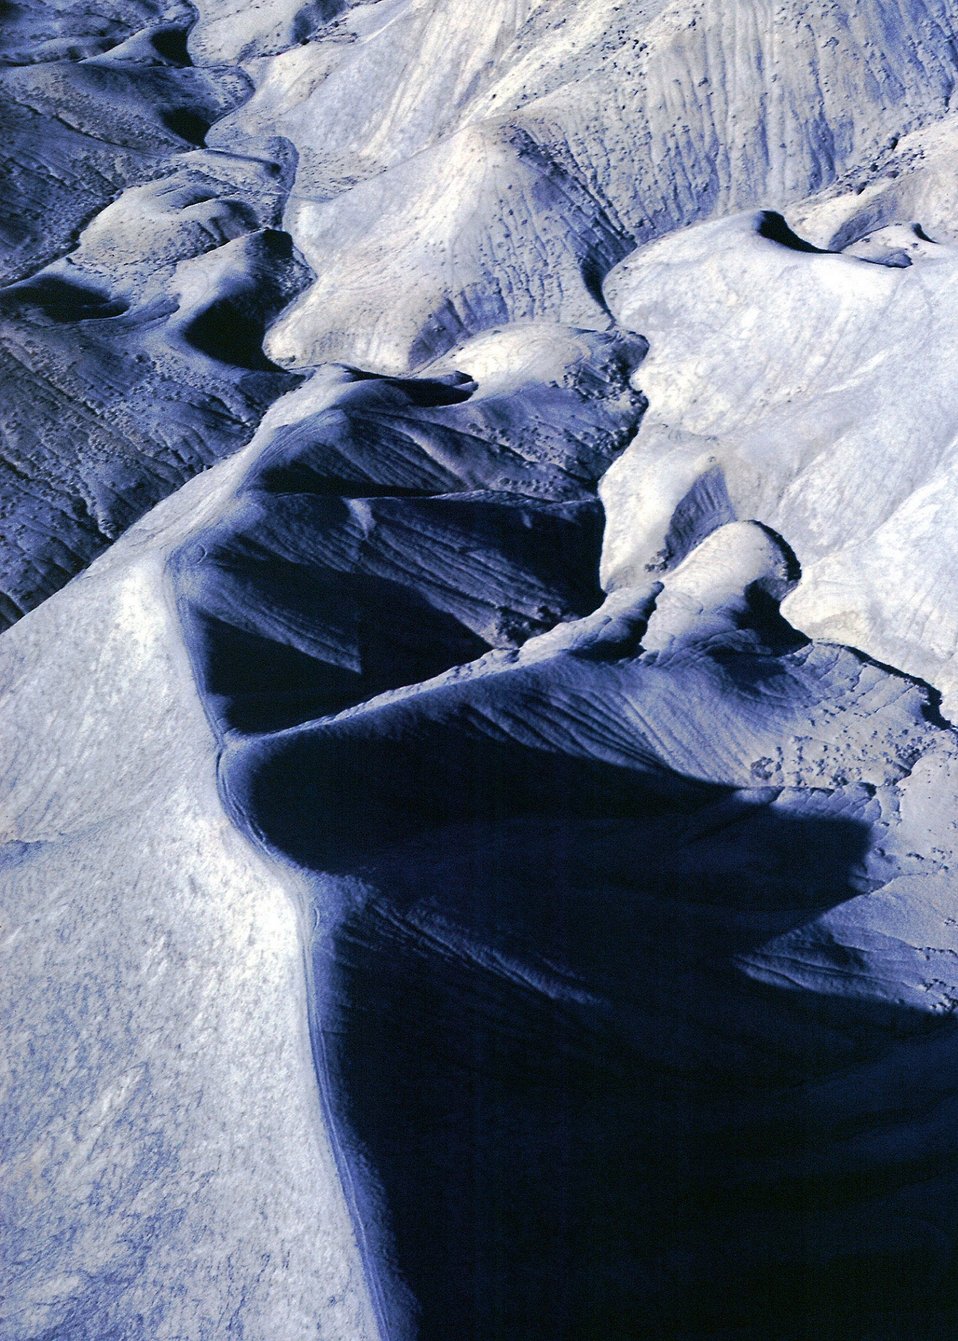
Adobe Bad Lands